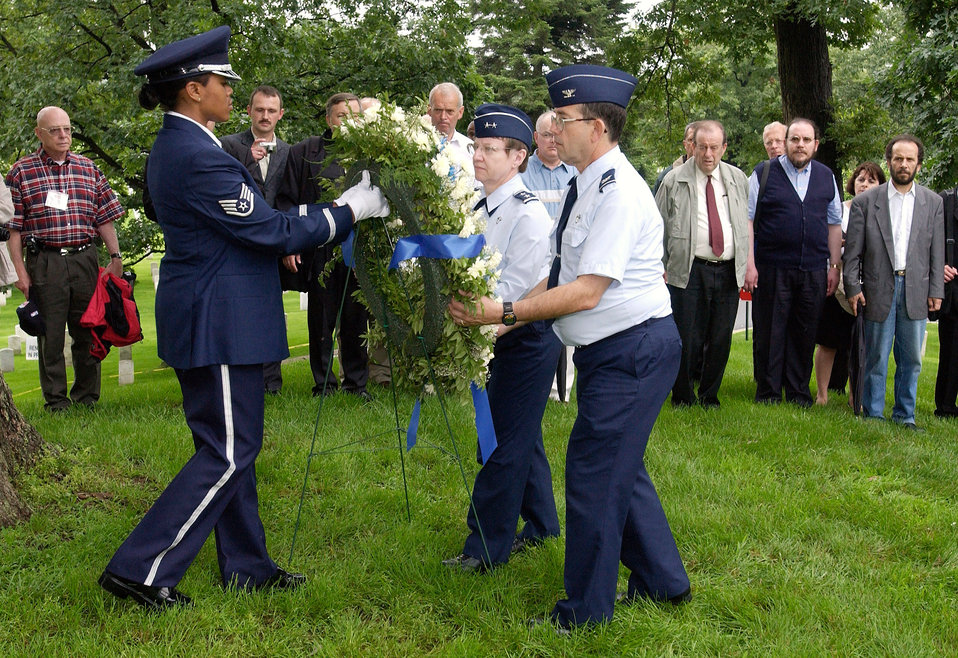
Memorial wreath

ARLINGTON, Va. (AFPN) -- Chief of Air Force Chaplain Service, Chap. (Maj. Gen.) Lorraine Potter (left), and Chap. (Col.) Darrell Morton salute during a memorial and wreath-laying service at Arlington National Cemetery on June 19. The NATO chaplains are in the Washington area for a weeklong NATO Allied Air Force Chief of Chaplains Consultative Conference.